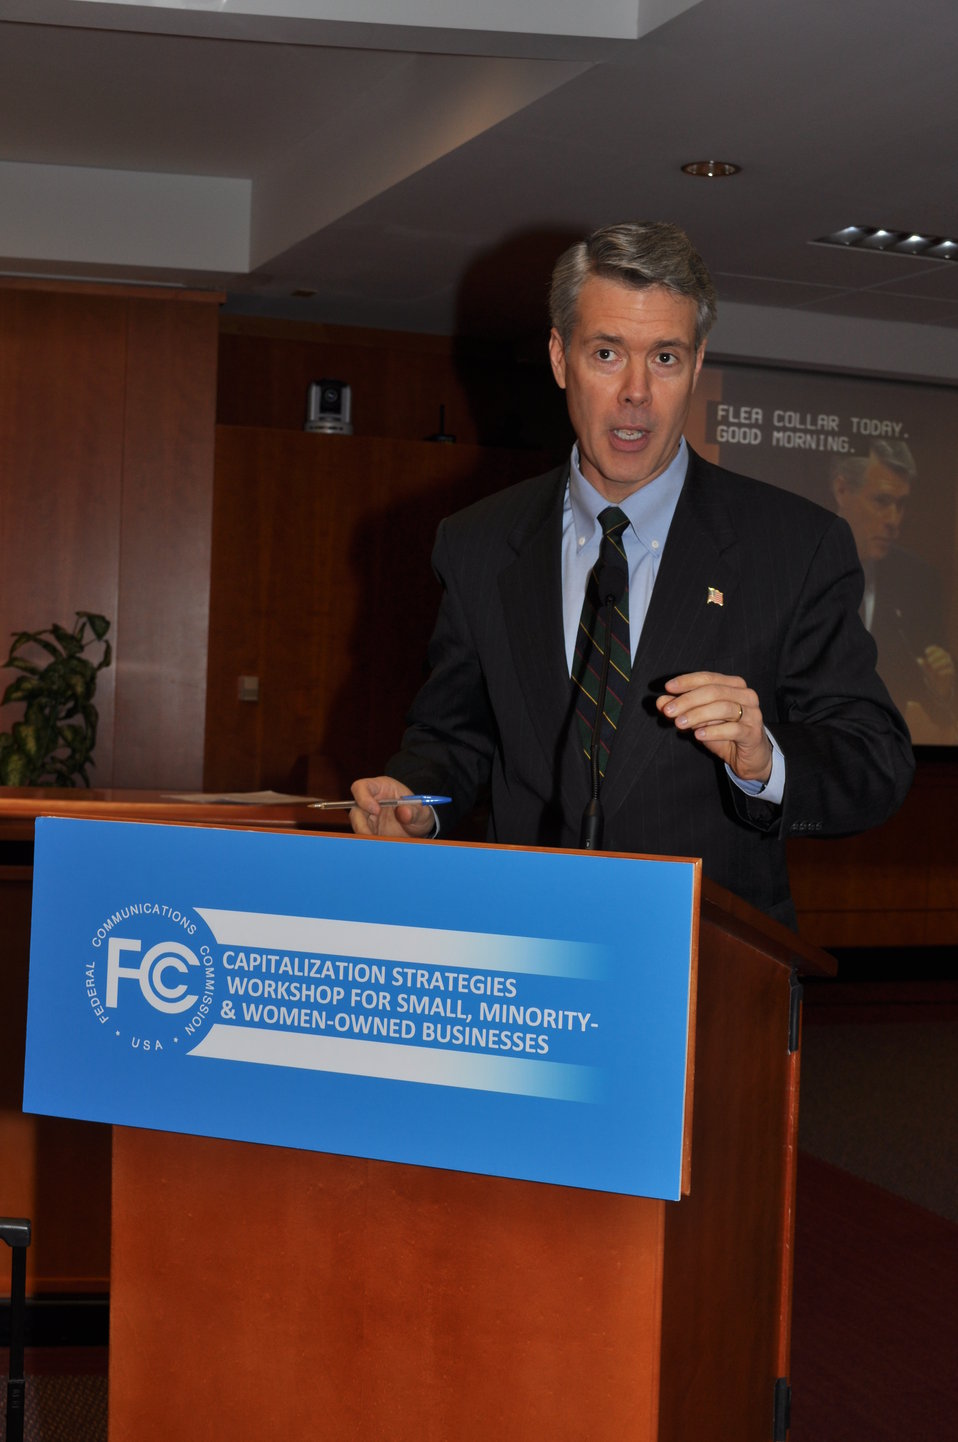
Capitalization Strategies

Workshop for small, minority and women owned businesses. Hosted by the Office of Communications Business Opportunities